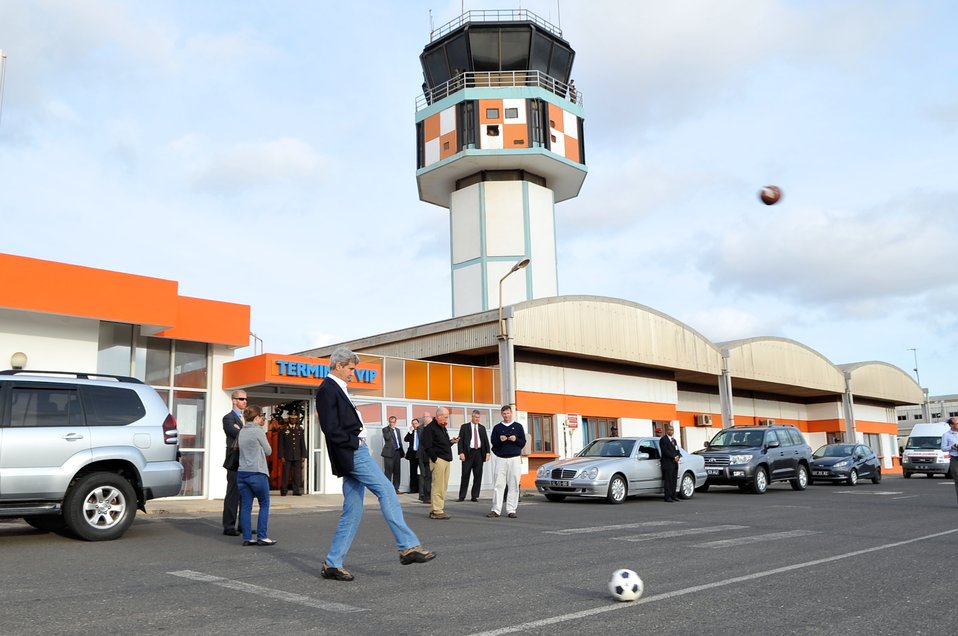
Soccer Ball, Football Fly as Secretary Kerry Makes Refueling Stop in Cape Verde

U.S. Secretary of State John Kerry kicks a soccer ball as a football flies overhead while he and his staff relax while their plane refueled on Sal Island, Cape Verde, during a flight from Luanda, Angola, to Andrews Air Force Base, Maryland, on May 5, 2014.